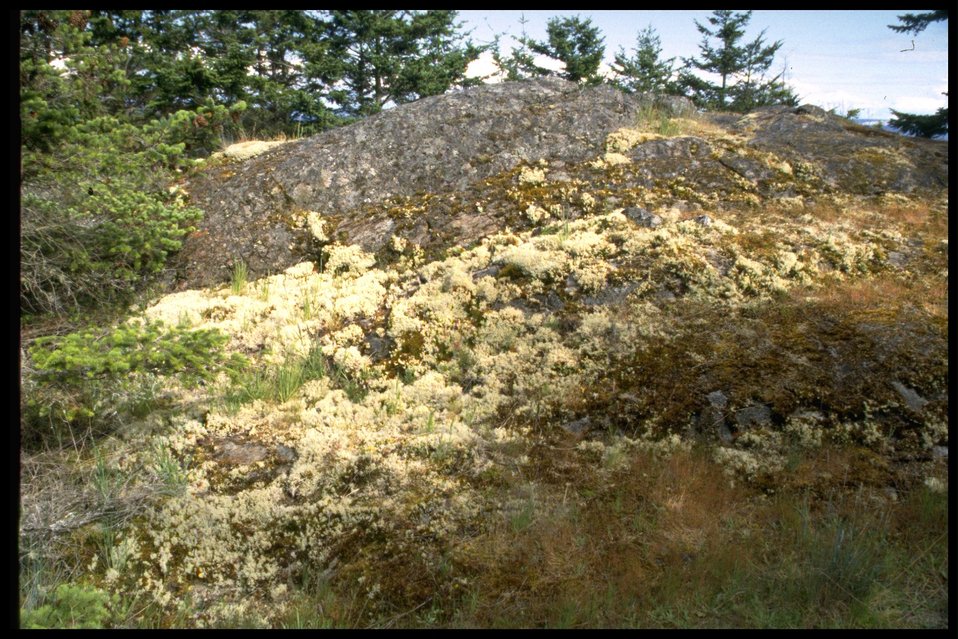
Point Colville lichen habitat.